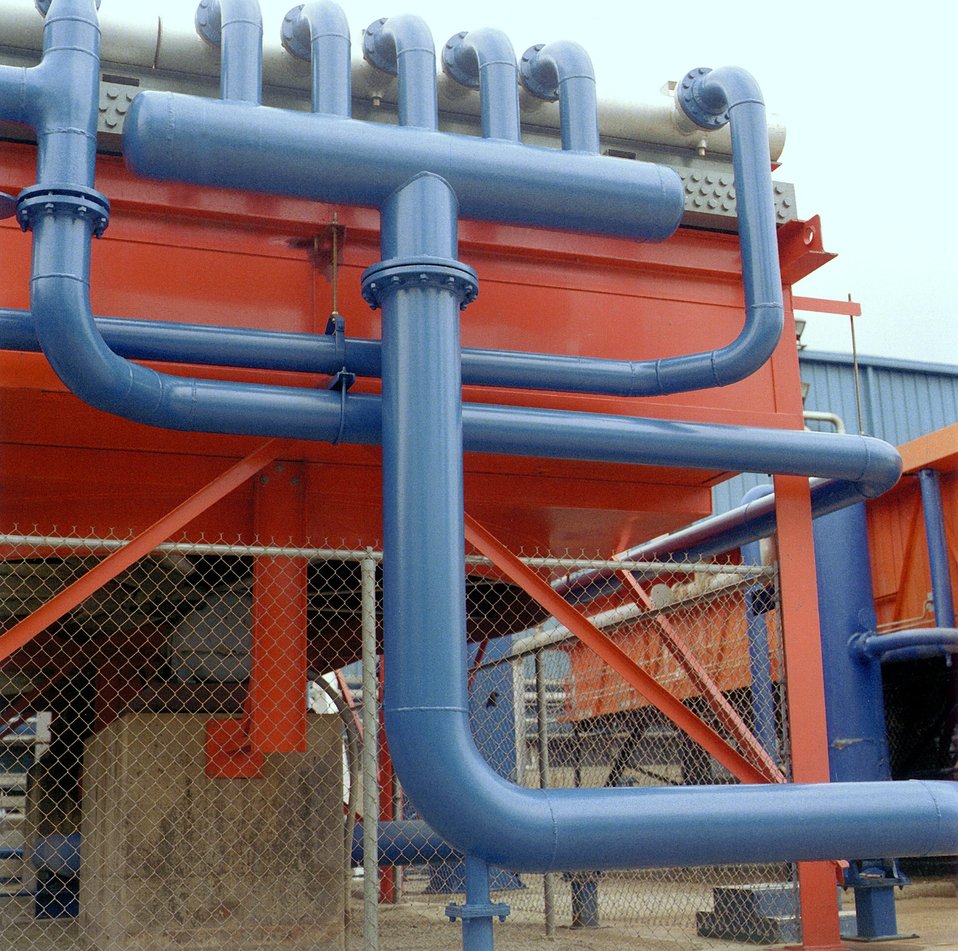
THE CHL, FERMI LAB'S COOLING SYSTEM FOR THE TEVATRON, FEATURES A COMPLEX SYSTEM OF PIPES AND VALVES.

SIX BUILDINGS WITH 24 COMPRESSORS AND 24 REFRIGERATORS ARE LOCATED ALONG THE TEVATRON, THE WORLD'S MOST POWERFUL ACCELERATOR. WITH HELP FROM THE CENTRAL HELIUM LIQUEFIER, THE REFRIGERATORS PRODUCE THE LIQUID HELIUM TO COOL THE SUPERCONDUCTING MAGNETS INSIDE THE TEVATRON TUNNEL. CAREFULLY ALIGNED, THE MAGNETS ARE NEEDED TO GUIDE PROTON AND ANTIPROTON BEAMS AROUND THE FOUR MILE LONG RING.